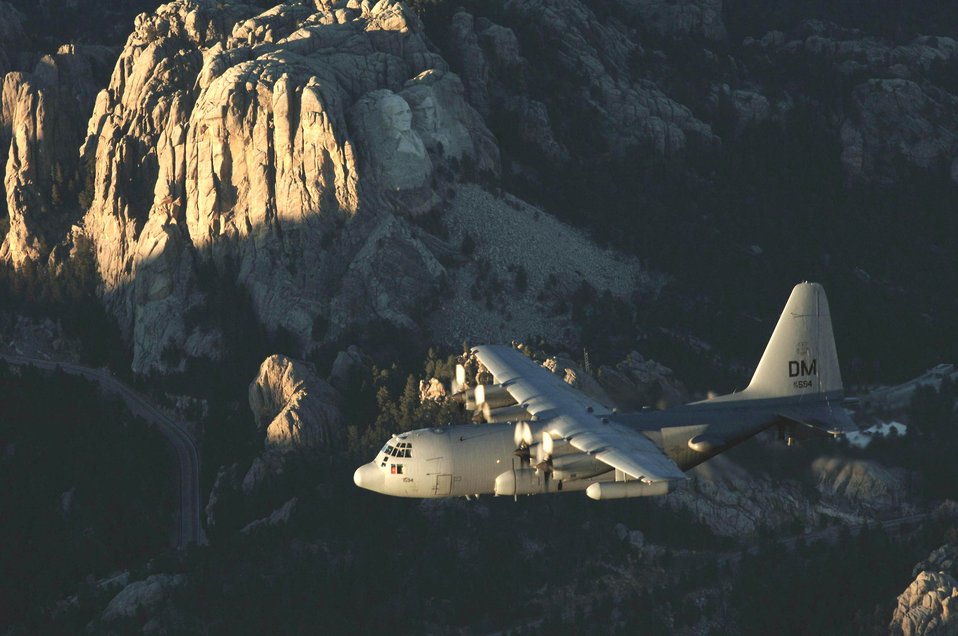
Mount Rushmore

OVER SOUTH DAKOTA (AFPN) -- An EC-130H Compass Call aircraft flies past Mount Rushmore during a training mission. The aircraft is from the 55th Electronic Combat Group at Davis-Monthan Air Force Base, Ariz.